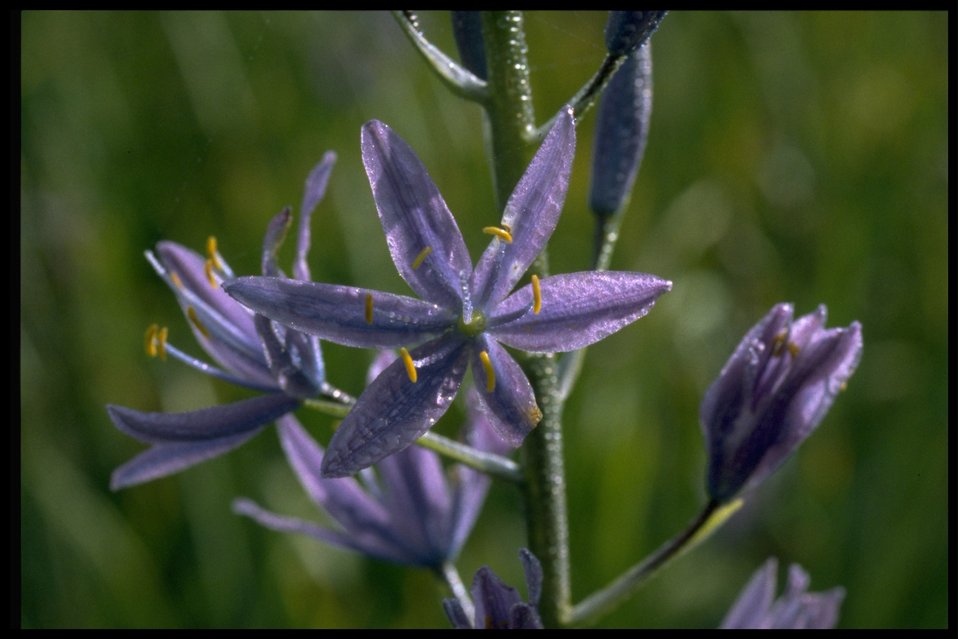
Closeup shot of Camassia quamash.